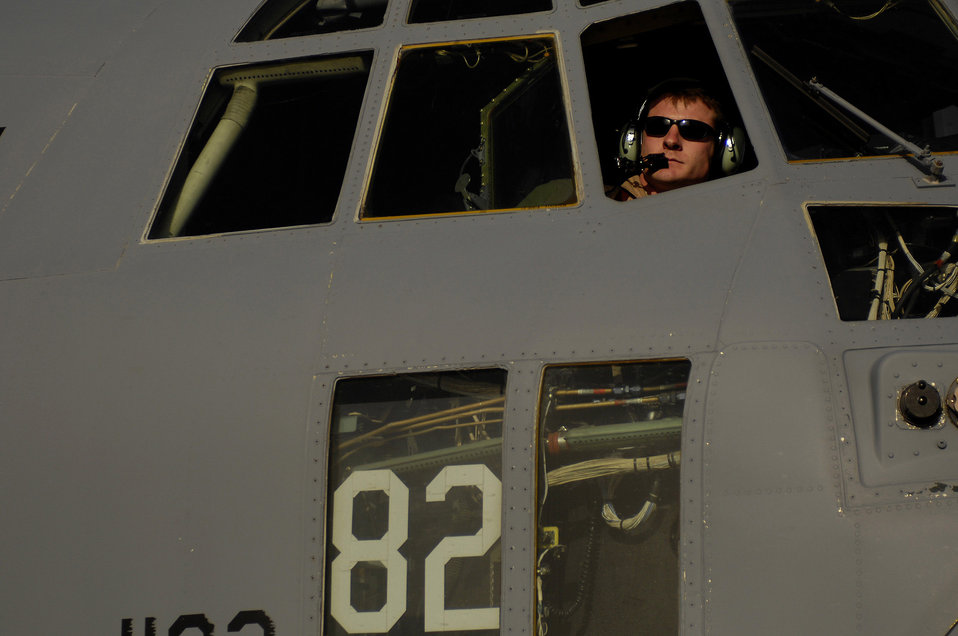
Delivering the goods

1st Lt. Ed Ladd checks the ramp prior to the engine start on a C-130 Hercules during an Operation Enduring Freedom mission April 16 from Bagram Air Base, Afghanistan. Lieutenant Ladd is a co-pilot assigned to the 774th Expeditionary Airlift Squadron and deployed from the 105th Airlift Squadron from Nashville, Tenn.